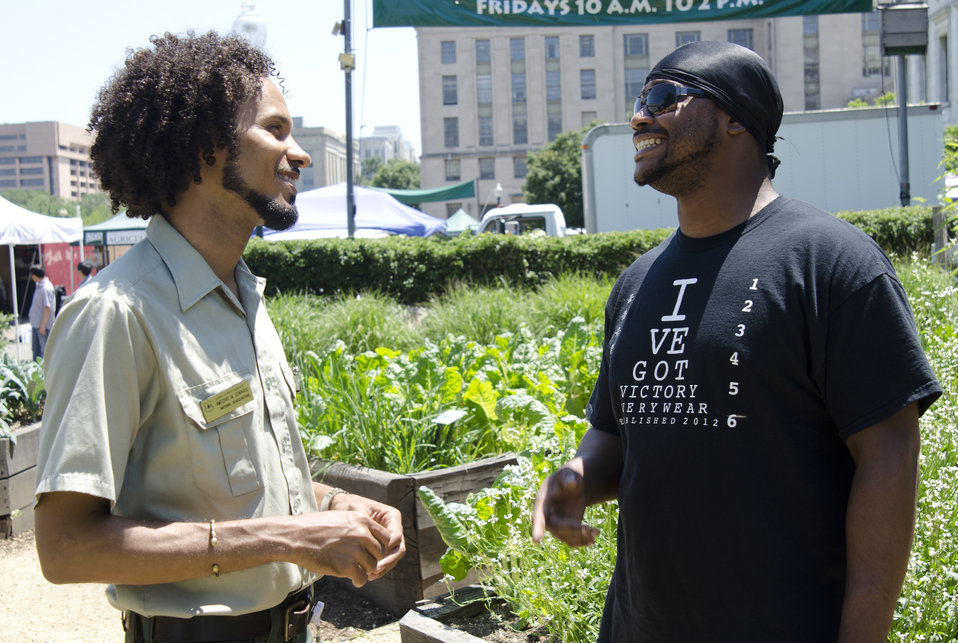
Peoples Garden Pollinator Display at the U.S. Department of Agriculture in Washington, DC, on Friday, June 21, 2013.